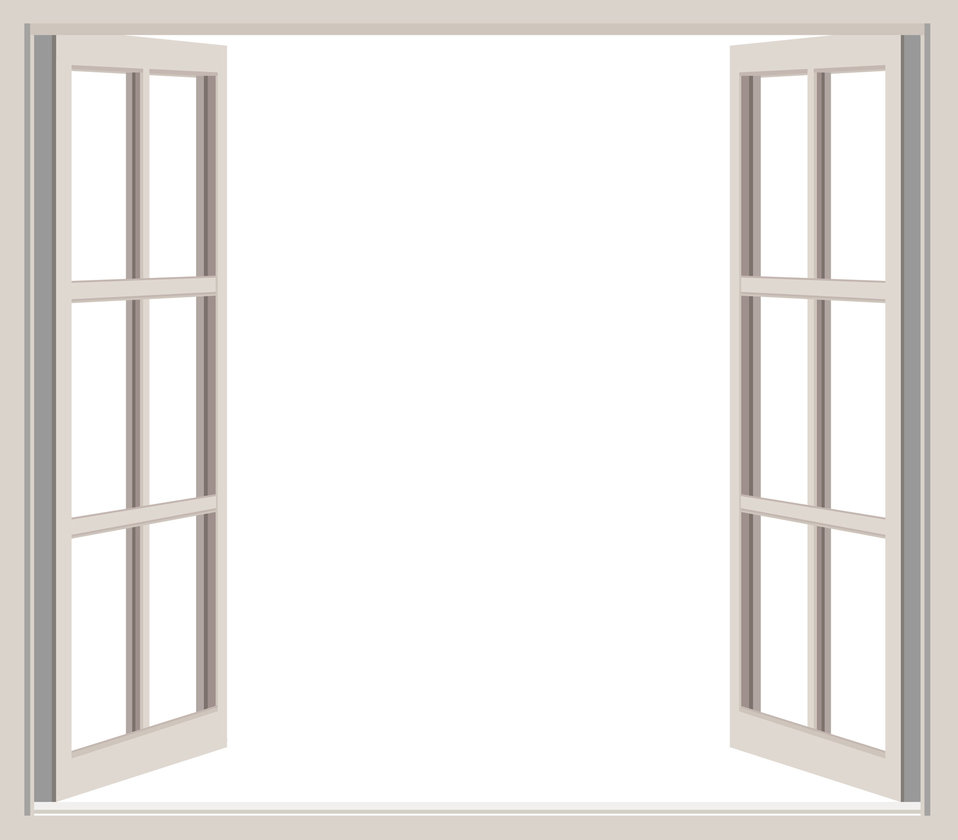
Open window frame clipart

Scene through a window blank clipart for scrapbooking and your image.